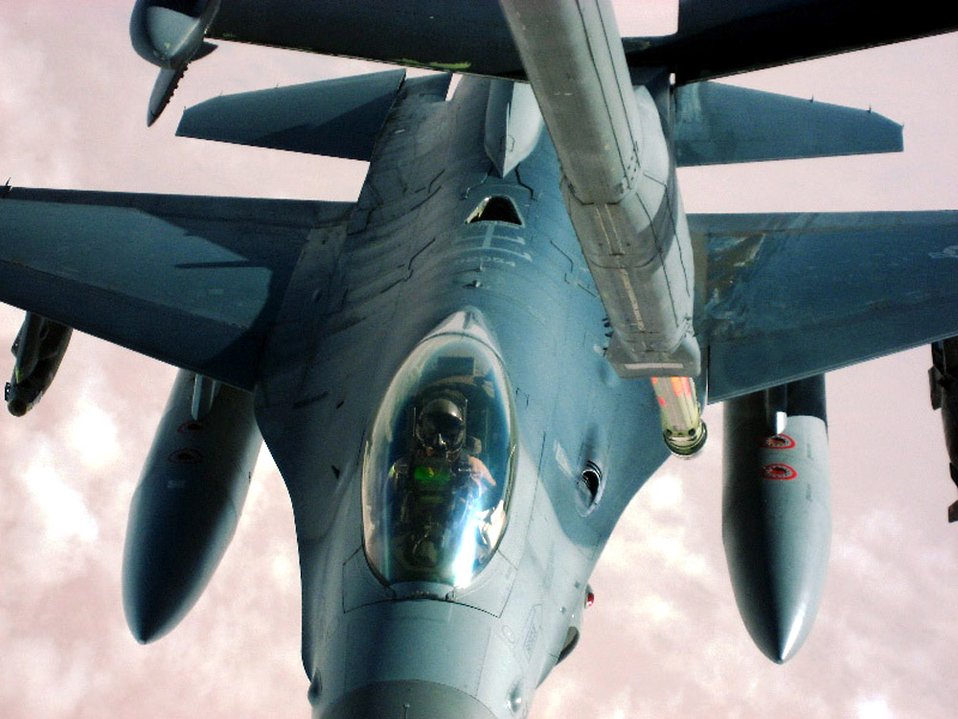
Refuel for the fight

An F-16 Fighting Falcon from the New York Air National Guard takes fuel from a KC-10 Extender from the 380th Air Expeditionary Wing over Iraq Nov. 4. The 380th AEW is the largest air refueling unit in Southwest Asia, using KC-10s and KC-135 Stratotankers to fuel U.S. and allied aircraft.